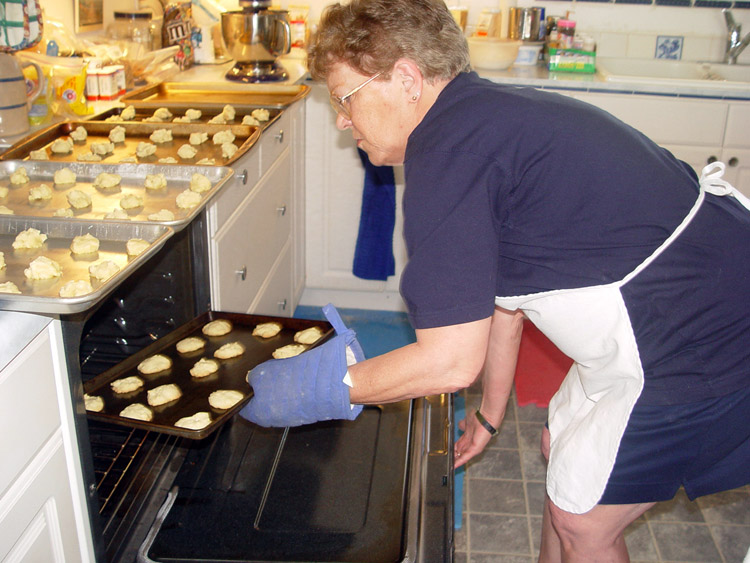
Cookie lady sends 30,000 cookies overseas

MCCONNELL AIR FORCE BASE, Kan. (AFPN) -- Merry Debbrecht, the